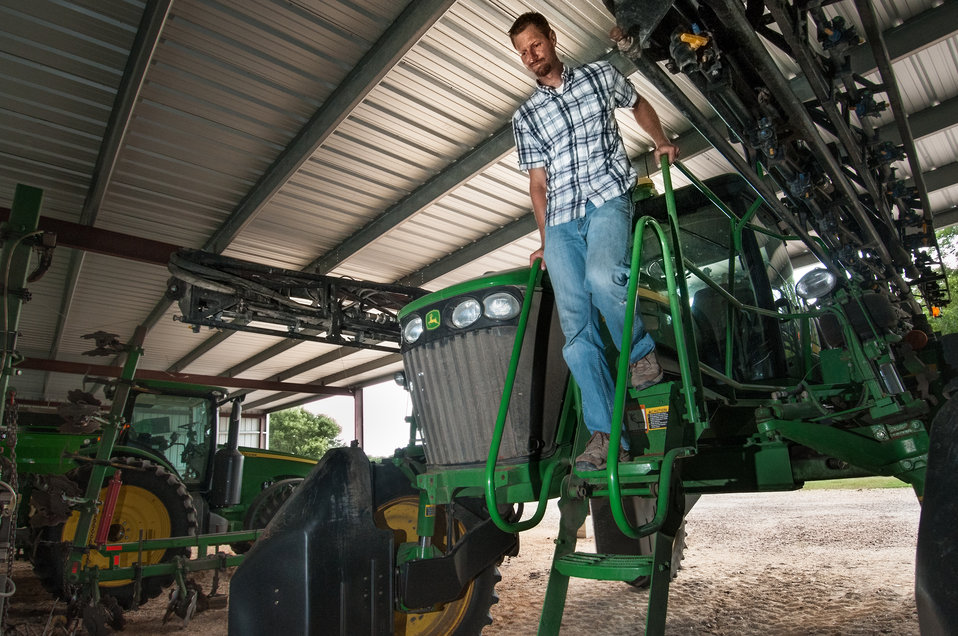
Michael Popp (pronounced Pope) performs mechanical checks on farm equipment used for tilling, planting, spraying and harvesting crops at Popp Farms 05 in El Campo, TX on Jun. 20, 2013. The Popp family spans five generations and grows cotton and milo (grain sorghum) on 2,400 acres of farmland. Michael chose farming after graduating from Texas A and M with a degree in Agriculture Economics and a Masters degree in Finance. The farm is a member of the United Agricultural Cooperative, Incorporated.